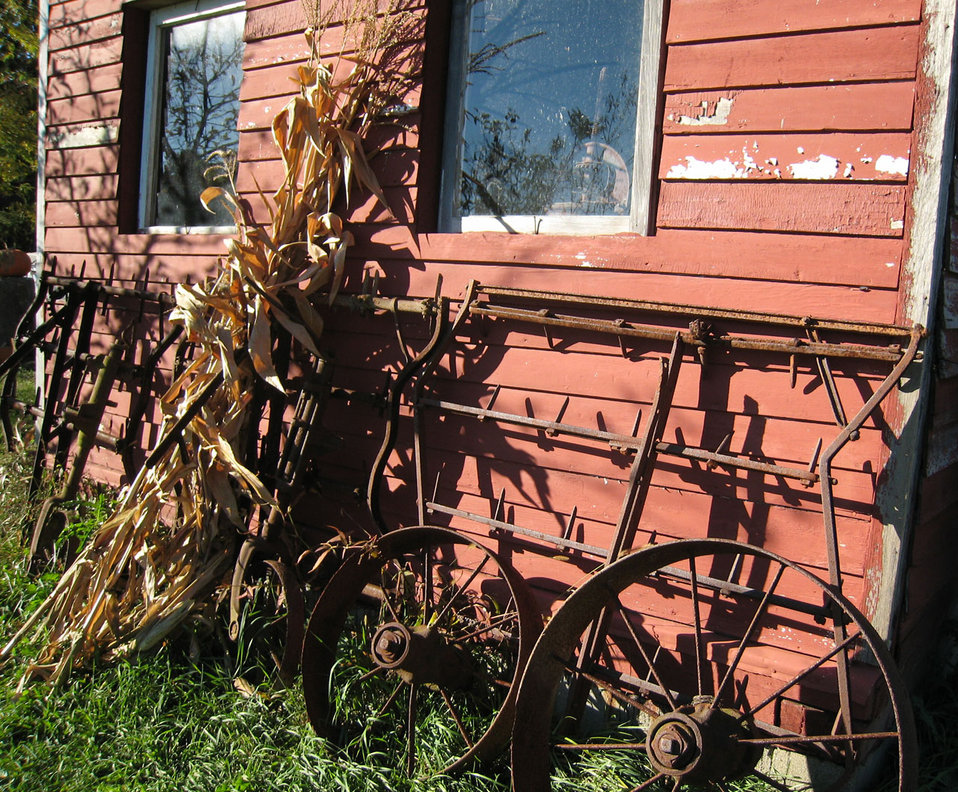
Farm life

Corn stalks, wagon wheels and shed.